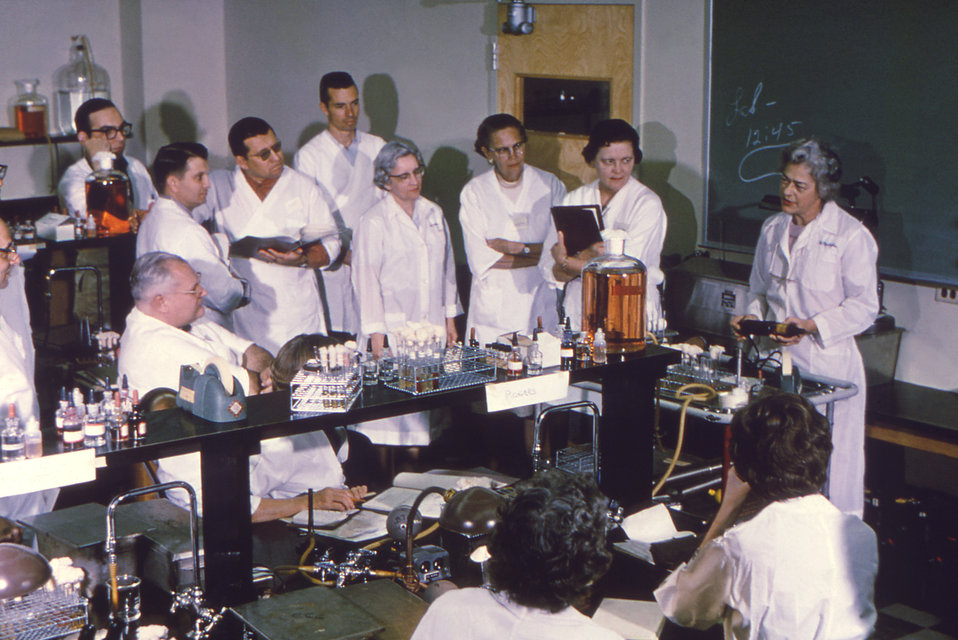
This historic image depicts a class of state laboratory personnel being taught by former Communicable Disease Center, CDC, bacteriologist, Elaine L. Updyke, Sc.D., of the Diagnostic Reagents Unit in the organization's Laboratory Branch.